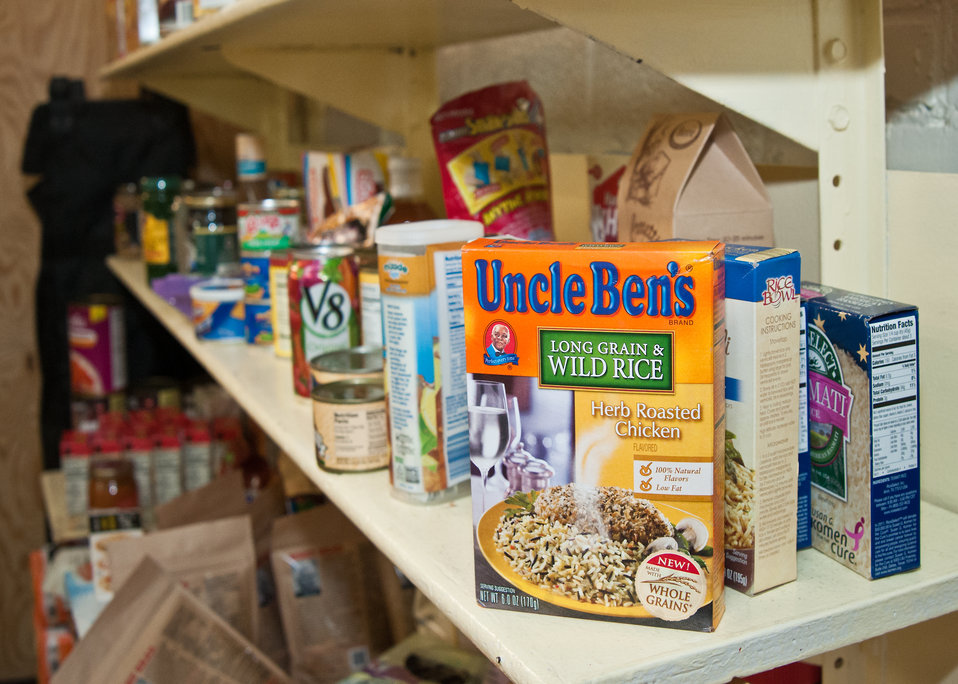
Fifty-five percent of the food distributed at the Arlington Food Assistance Center in Arlington, Virginia is donated food. So far in 2012, The AFAC has served an average of 1,500 families per week. Agriculture Secretary Tom Vilsack designated January 12, 2012 as the first United States Department of Agriculture Martin Luther King Day of Service to recognize Dr. King’s contributions to the Civil Rights Movement. The volunteer service involved USDA nutrition programs.